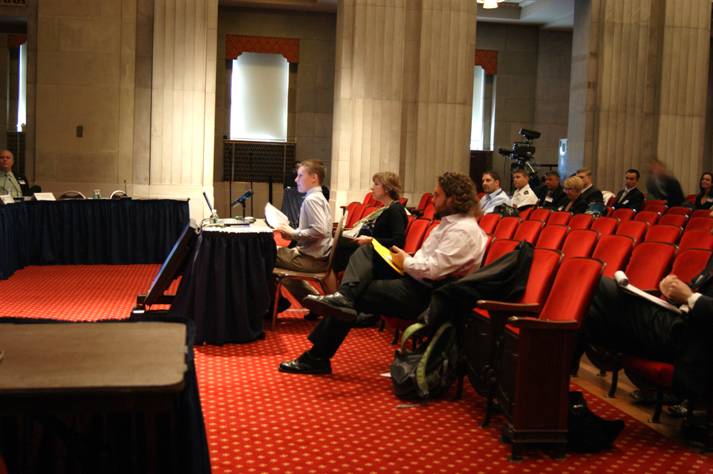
Coral Reef Task Force - Winter Meeting 2012